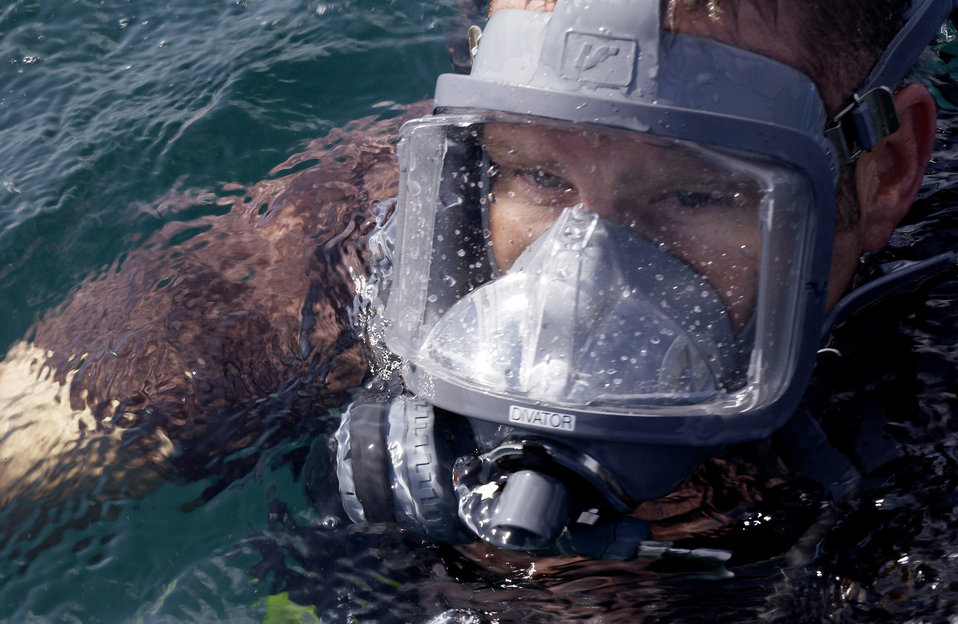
Operation Enduring Freedom

DJIBOUTI, Africa (AFPN) -- An Air Force pararescueman surfaces after dive currency training off the coast here. The Airman is a Reservist from the 304th Rescue Squadron at Portland International Airport, Ore.